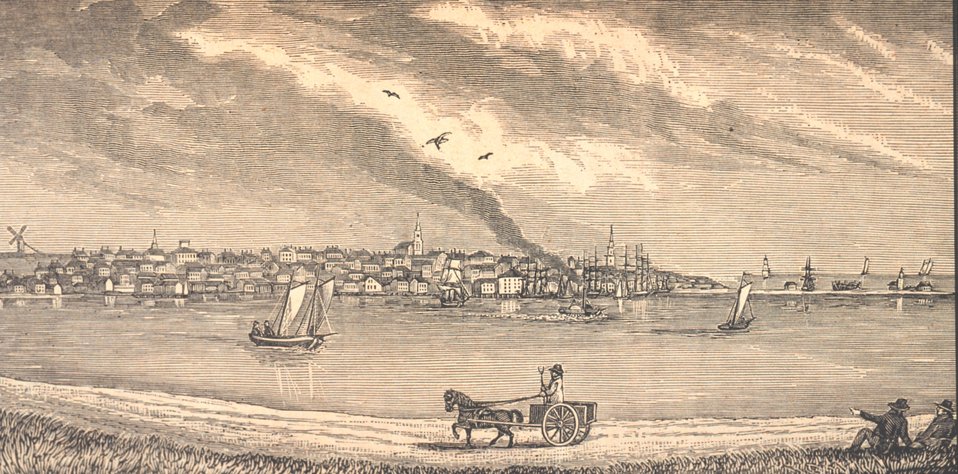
Nantucket as seen from the shore of the inner harbor, southeast from the town. The lighthouse on Brant Point is seen in the distance on the right. In: Historical Collections ... of Every Town in Massachusetts. 1841.